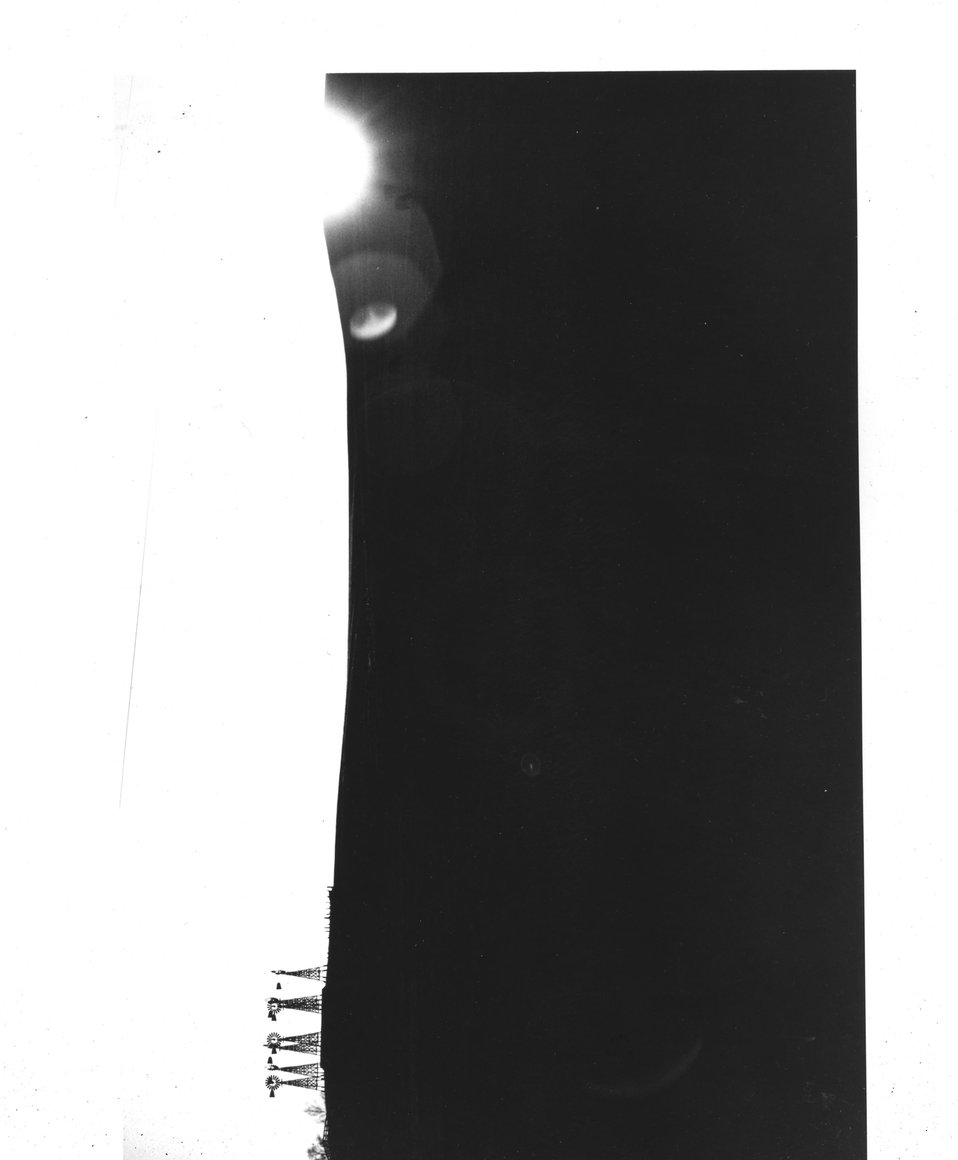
Stark rigs scratch the sky on a ranch near Harrison, Nebraska. c. Undated